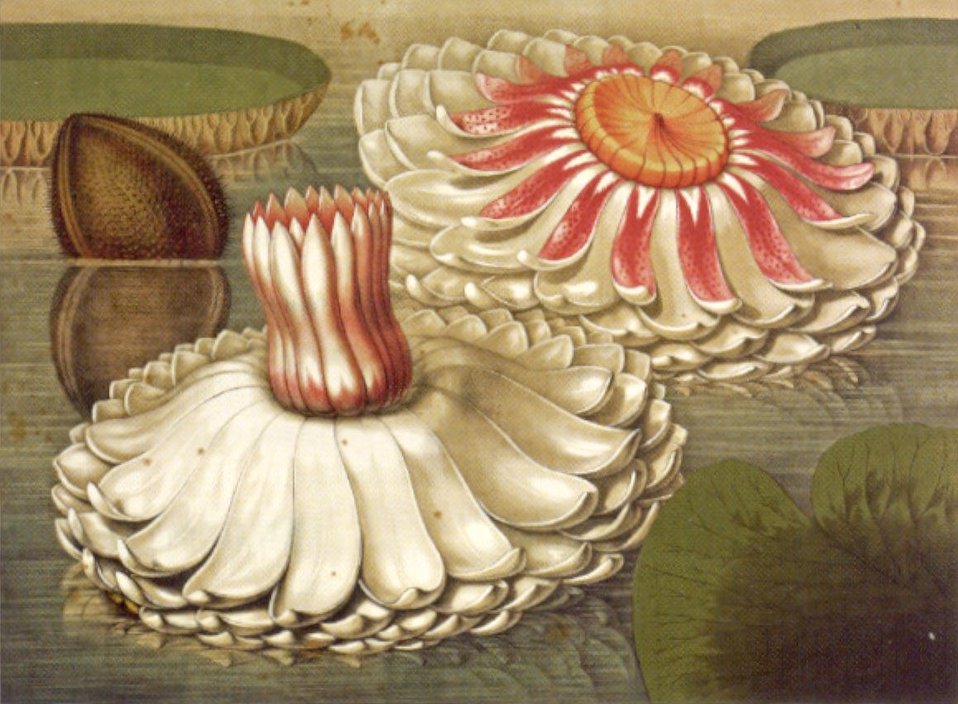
Lily in A Selection of Hexandrian Plants by Priscilla Susan Bury, 1831, Loy McCandless Marks Library